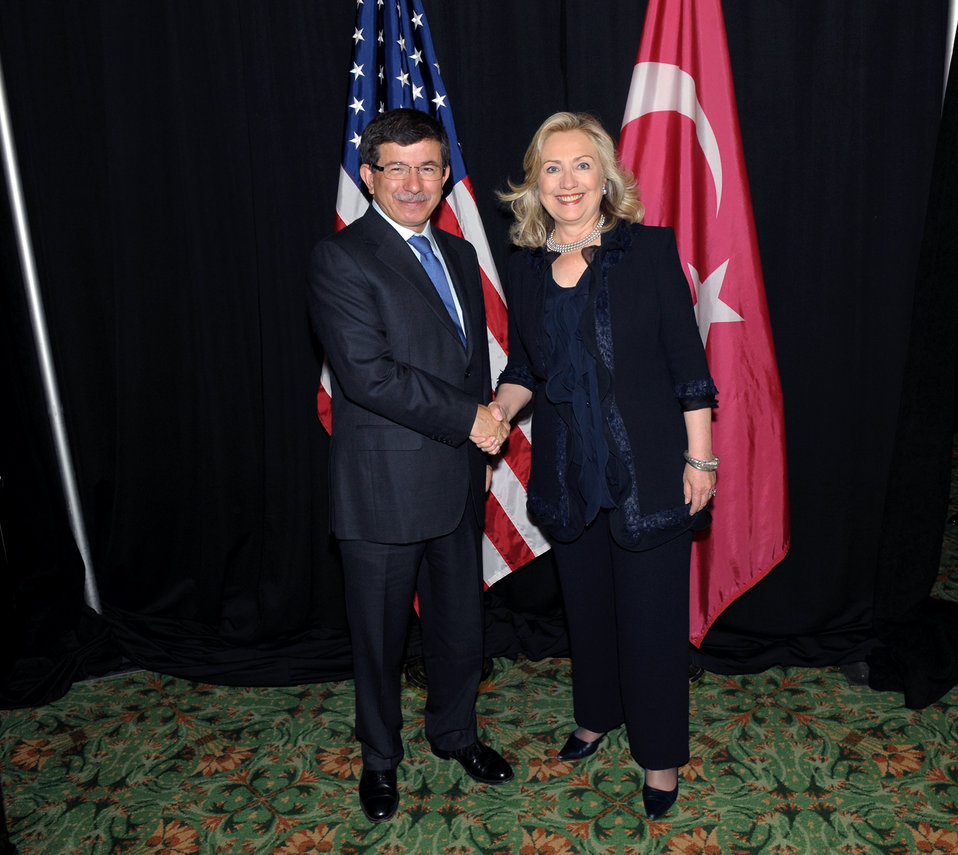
Secretary Clinton and Turkish Foreign Minister Davutoglu Co-Host the Official Launch of the Global Counterterrorism Forum

U.S. Secretary of State Hillary Rodham Clinton and Turkish Foreign Minister Davutoglu co-host the official launch of the Global Counterterrorism Forum, at the Waldorf-Astoria Hotel in New York, New York, on September 22, 2011.